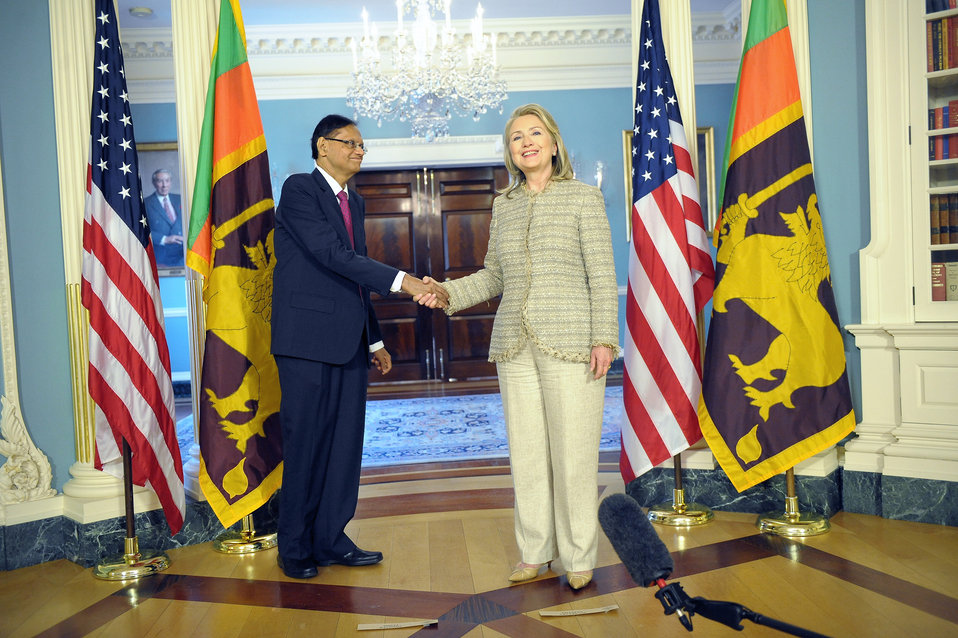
Secretary Clinton Meets With Sri Lankan External Affairs Minister Peiris

U.S. Secretary of State Hillary Rodham Clinton meets with Dr. Gamini Lakshman Peiris, Minister of External Affairs of the Democratic Socialist Republic of Sri Lanka, at the U.S. Department of State in Washington, D.C. on May 18, 2012.